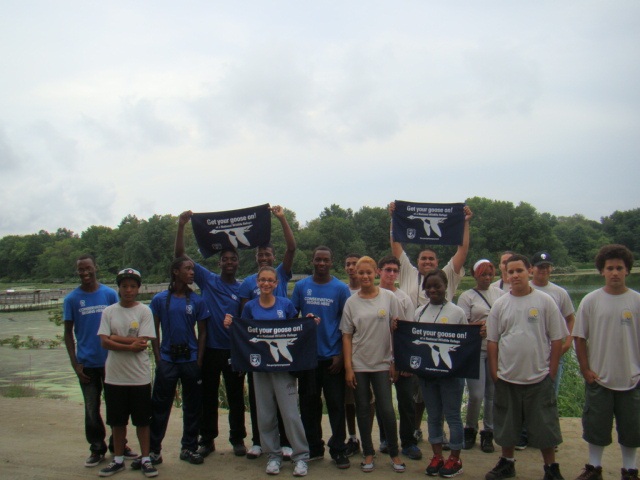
Get Your Goose On!

SCA Crew and Camden Children's Garden visit John Heinz NWR for a tour.